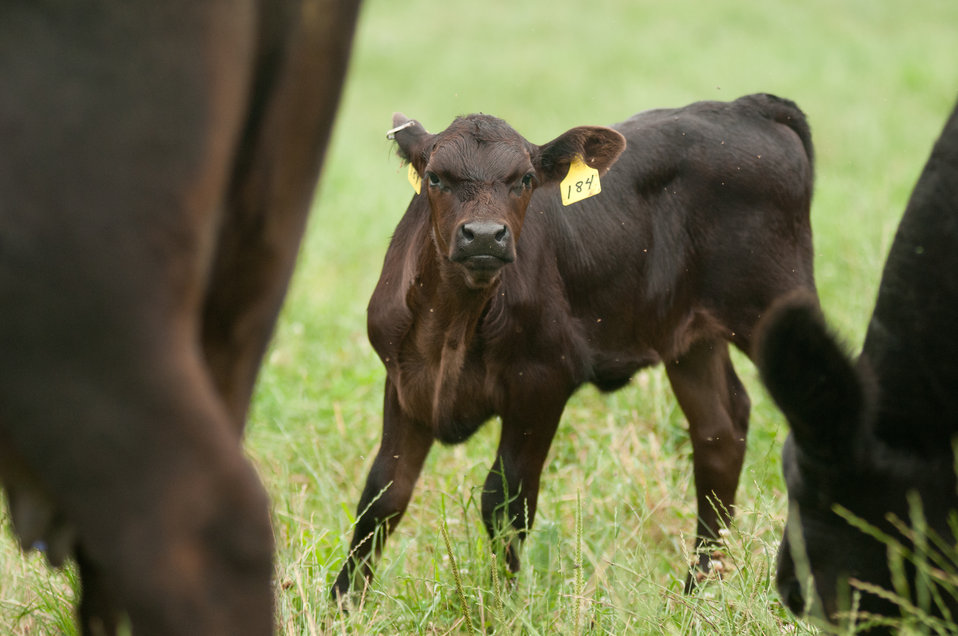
Black Angus cows and calves graze organic pastures, and for added nutrition and variety, they enjoy a daily feeding of sweet silage at Nick’s Organic Farm, owned by Nick Maravell, in Adamstown, MD on Friday, July 12, 2013. The white plastic wrapped bales of pasture grass and alfalfa have been fermenting for months to create sweet silage that stores well and can be used to feed cattle at varying amount all year long. The fermentation process sweetens the taste and increases the vitamin levels. The farm produces Black Angus beef, chicken, turkey, eggs, hay, soybeans, corn, alfalfa, orchard grass, rye; and other crops. The cattle are 100% grass-fed receiving certified organic pasture, certified organic hay (in winter), water and mineral salts mixed with sea kelp. The cattle are not fed hormones, antibiotics or animal products. Poultry feed from grain is ground from organic grain. The poultry also graze on organic pastures. The farm has conducted on-farm research with federal, state and non-profit agencies to refine organic practices. An organization such as the U.S. Department of Agriculture (USDA) Agricultural Research Service (ARS) center in Beltsville has been able to conduct research to improve organic crops and to breed and manage the cattle so that they have.